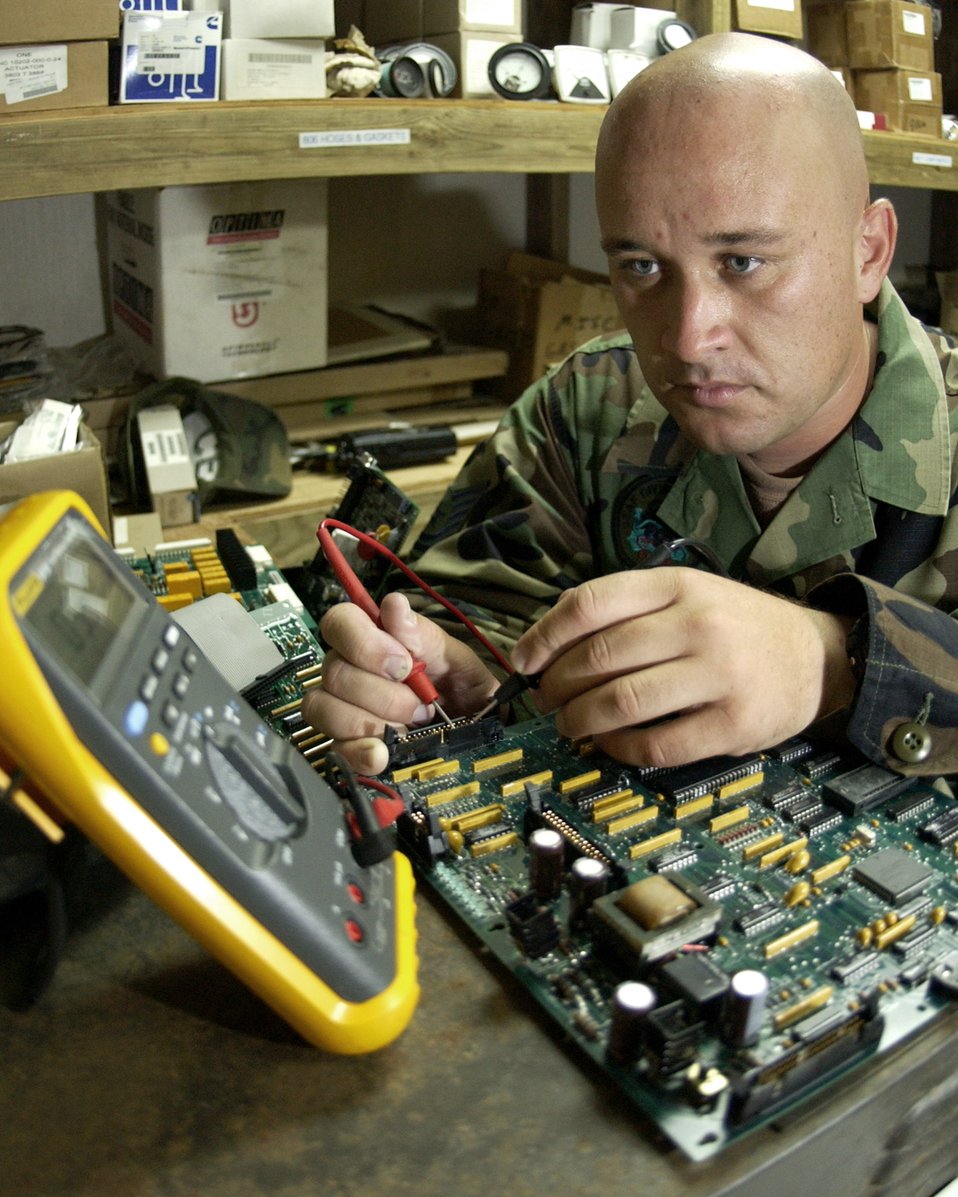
Circuit test

Tech Sgt. Keith Ongley tests a circuit card Oct. 5 at Andersen Air Force Base, Guam. The power production shop maintains more than 65 generators, 43 real property installed units and four BAK-12 aircraft arresting systems.